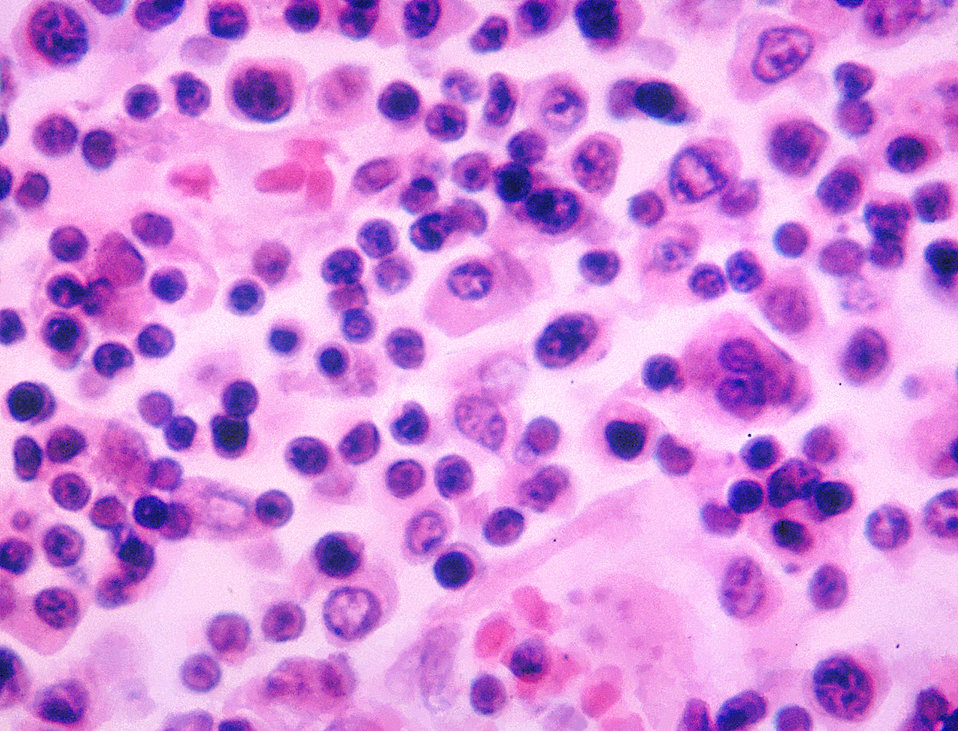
Histopathology of a lymph node in a case of Typhoid Fever.